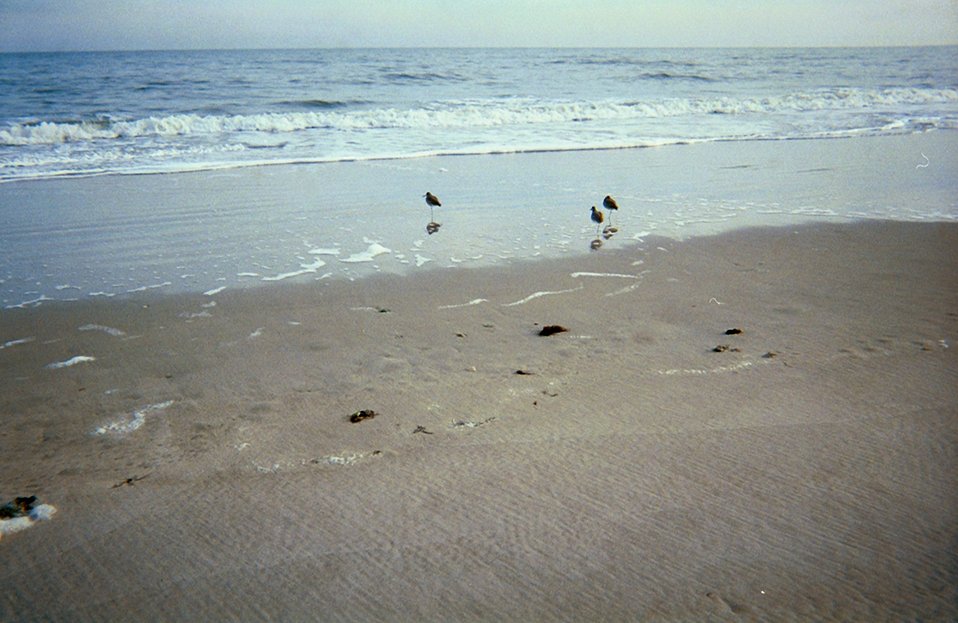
Shore birds looking for dinner in the swash from the surf.